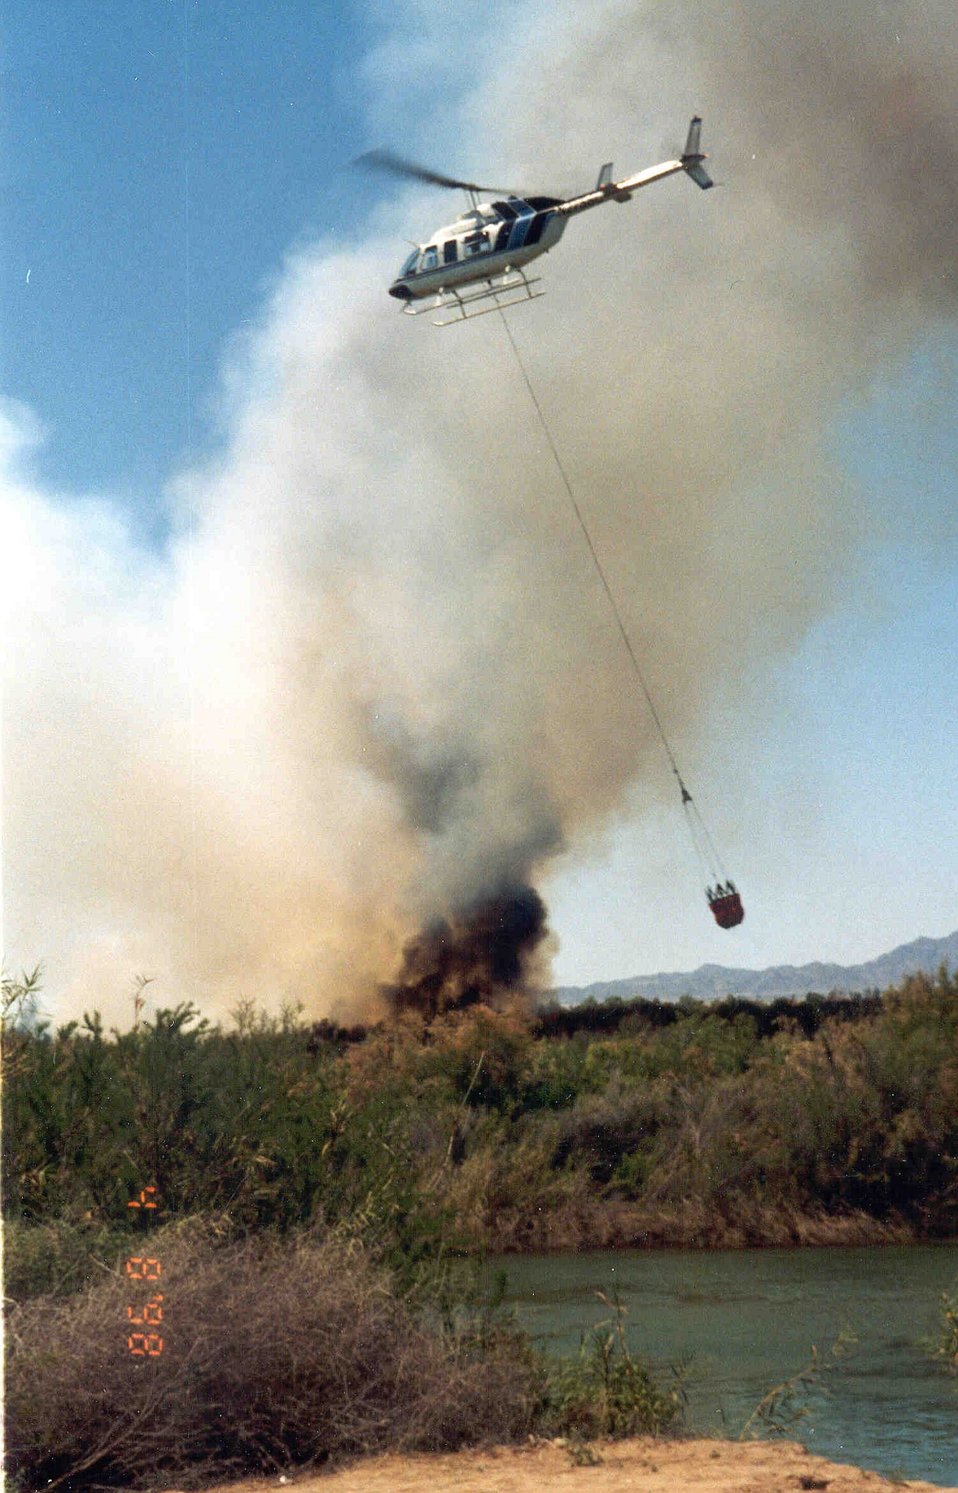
Helicopter bucketing water from the Colorado River to help control a wildfire.